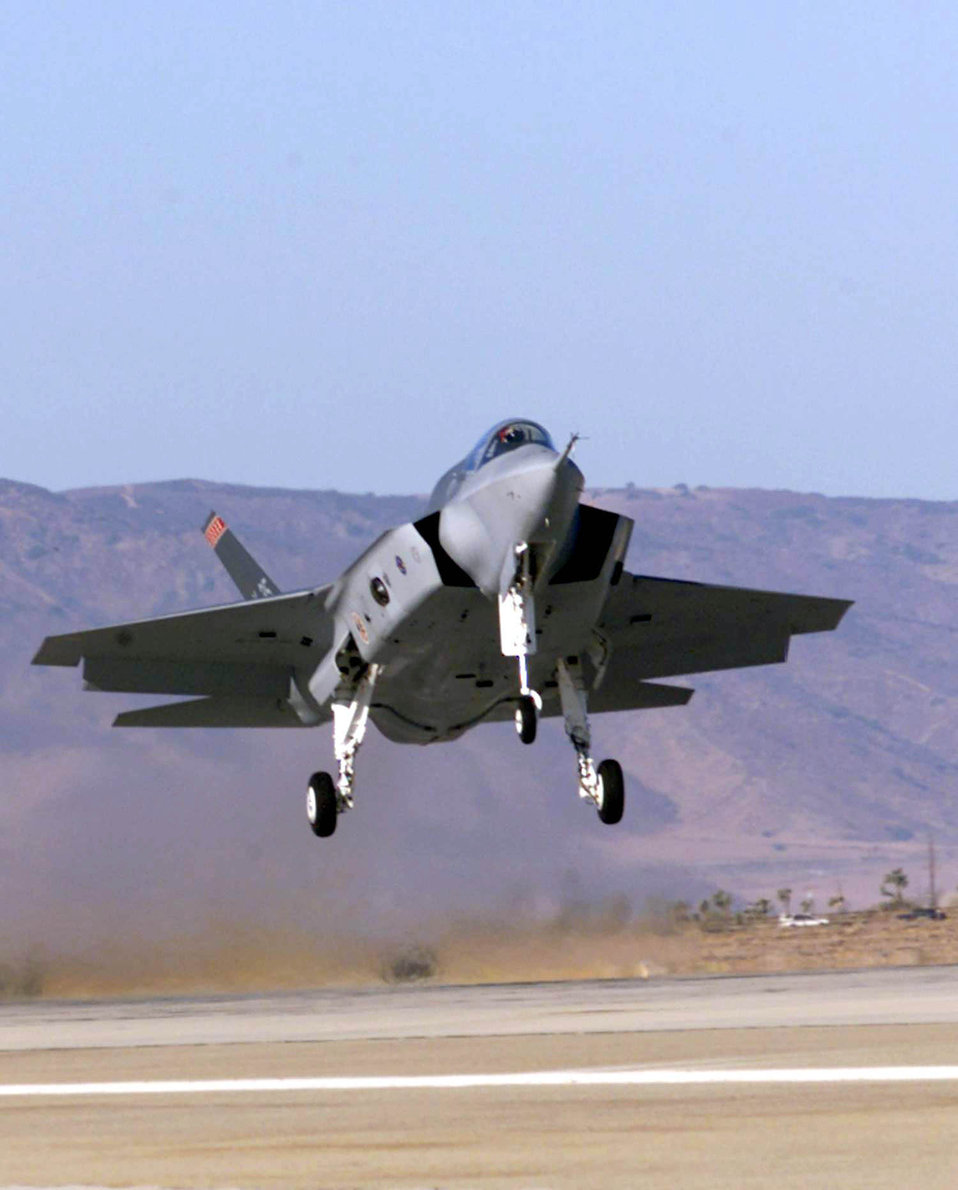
X-35A

EDWARDS AIR FORCE BASE, Calif. -- Lockheed Martin's X-35A Joint Strike Fighter concept demonstrator lands at Edwards Air Force Base, Calif., completing the aircraft's first flight.